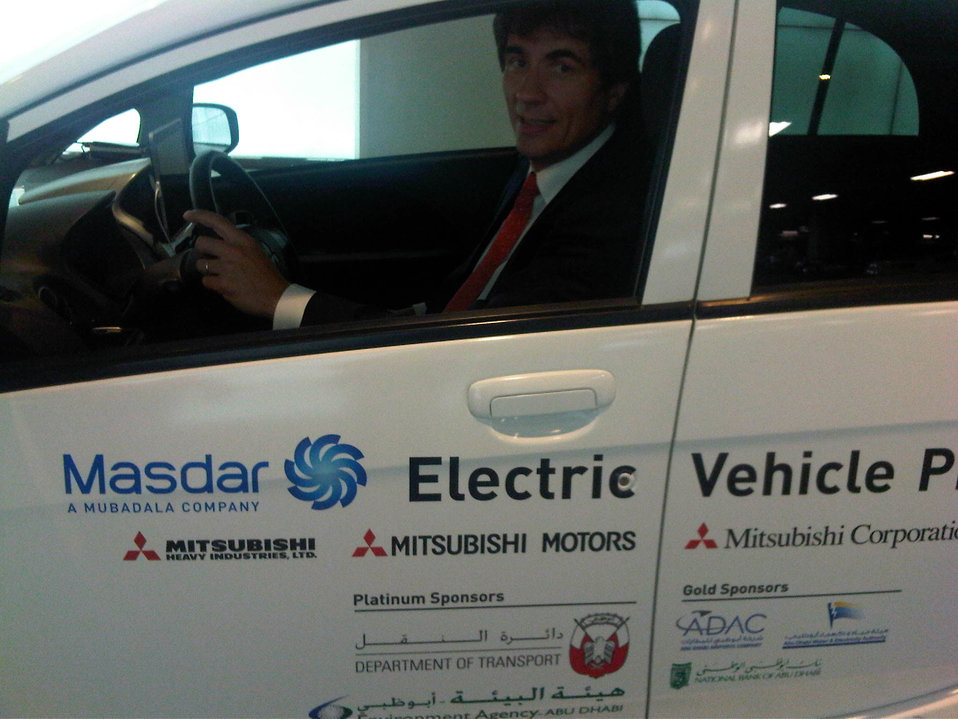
Assistant Secretary Fernandez Drives an Electric Car

Assistant Secretary of State for Economic, Energy and Business Affairs Jose Fernandez drives an electric car powered by solar energy at Masdar, the world’s first completely zero carbon, zero waste city, in Abu Dhabi, United Arab Emirates, on October 26, 2011.